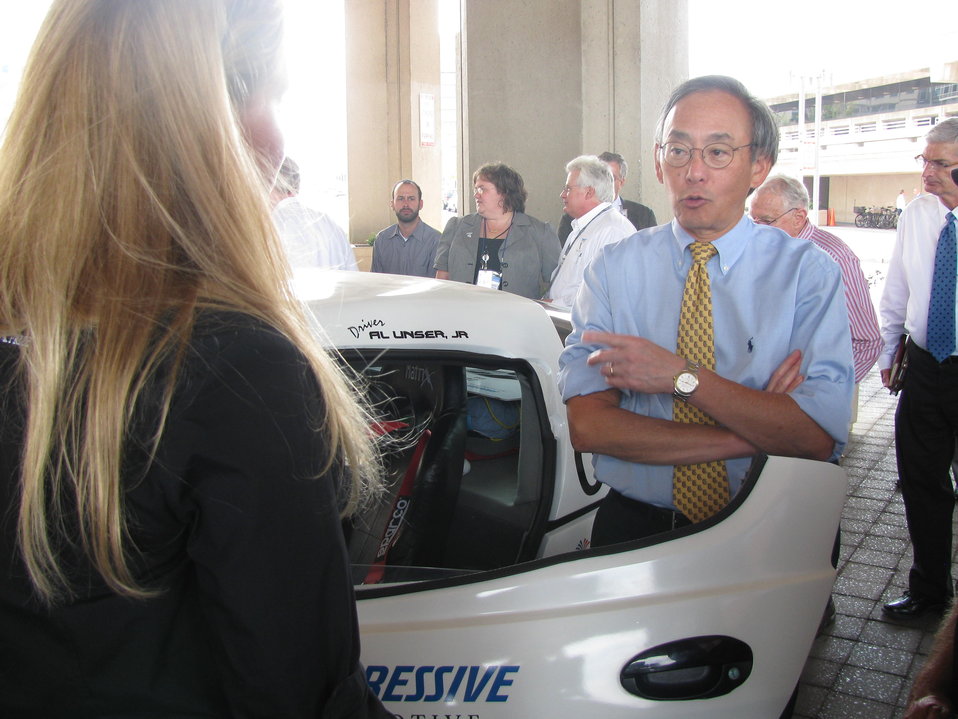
X Prize 014